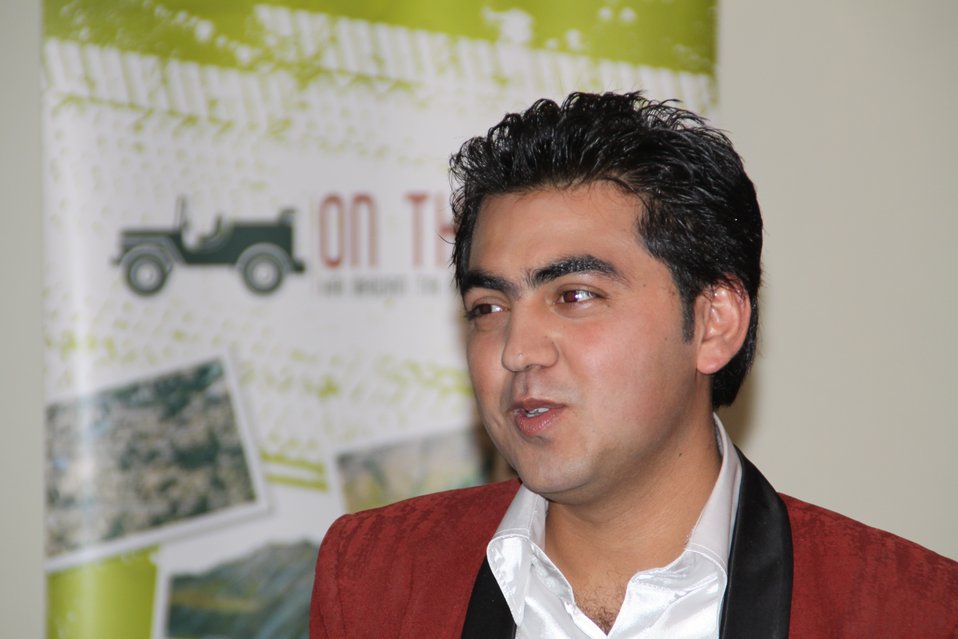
Wise Communication د هی میدان-طی میدان د لیدونکو سروی معلومات خپاره کړل

کابل، افغانستان، د جون ۱۵- د طلوع تلویزیون د هی میدان-طی میدان پروګرام د لیدونکو په هکله د یوی سروی لمړنی موندنی نن خپاره شول چی وایی د ۳۵ سلنی څخه زیات خلک په افغانستان کی هره شنبی شپه دا پروګرام ګوری. دا سروی د وایز ستراتیژیک کمیونیکیشن (Wise Strategic Communication) لخوا د امریکی متحده ایالاتو پرمختیایی اداری (USAID) په مالی مرسته ترسره شوی ده.

وایز دا سروی د اپریل په میاشت کی په نهه ټاکل شویو ولایتونو کی ترسره کړه. پدی سروی کی د ۲۰۰ څخه ډیرو ګډونکونکو رای ورکړه، په ۹ فوکس ګروپونو کی ۴۵ باخبره خلکو سره اساسی مرکی ترسره شوی ترڅو د هغوی نظرونه او ددی پروګرام اغیز په افغانی لیدونکو باندی ارزیابی کړی.

د هی میدان-طی میدان یا (On the Road) پروګرام چی د امریکی متحده ایالاتو پرمختیایی اداری لخوا تمویلیږی د افغانانو ملی ویاړ د توپیرونو سره سره د یو موټی او متحد اولس په شان جوړوی. دا پروګرام هره اونی یو نوی ولایت او سیمی ته خپله پاملرنه اړوی. ښاغلی مجیب عارض د مختلفو ولایتونو تاریخی، ټولنیز، او کلتوری اړخونه رابرسیره کوی، سیمه ایز خوراکونه څکی، سیمه ایزی لوبی کوی او سیمه ایز تاریخی ځایونه ګوری. دا پروګرام د هیواد د هر ګوډ څخه،د نړیوالی ټولنی په همکاری د افغانستان حکومت لخوا د بی شمیره کامیابو پرمختیایی پروژو په شمول، واقعی افغانی کیسی خلکو ته وړاندی کوی. د بزګرانو، ډاکټرانو، کارکونکو،ځوانانو او ټولنو مشرانو سره د مجیب مرکو له لیاری افغانان په خپل هیواد کی تغیرات ګوری او د پرمختیایی کوښښونو اغیز په خپله د افغانانو د خبرو له لیاری اوری.

د سروی څخه ځنی موندنی او لاس ته راوړنی په لاندی ډول دی:

•په ښه برابر ډول لیدونکو سره خبری شوی وی، د رایو معلوماتو د ښودنو له مخی هزاره، تاجک، ځوانو او با تحصیله ځواب ورکونکو لږ څه ډیر غوښتل چی دا پروګرام وګوری.
•پروګرام په ښه ډول رسیدلی وو، او ځواب ورکونکی دی ته لیوال وو چی د خپل هیواد د هر ګوډ څخه د رنګارنګو کلتورنو او تاریخ په هکله د زده کړی ښه موقع ده. د لیدونکو ۹۷ سلنی غوښتل چی دی پروګرام ته دی ادامه ورکړل شی او تر ټولو لوړه غوښتنه دا وه چی هره برخه دی اوږده شی.
•د موندنو څخه یو دا وه چی لیدونکو دی پروګرام ته د ملت جوړونی سره تړاو ورکاوه.

د فوکس ګروپونو له لیاری (Wise Communication) لاری ته اچولی وو په ملی یووالی باندی ځانګړی تاکید شوی وو ترڅو د یوی اونی څخه تر بلی اونی پوری د هی میدان-طی میدان پروګرام له لیاری ملی یووالی لا ښه قوی شی. ځنی ځوابونه په لاندی ډول وو:

•'دا د افغانانو په ملی یووالی کی یو مثبت رول لوبوی. کله چی افغانان نور خلک په ولایتونو کی ګوری چی یو شان دین لری او د هغو د ژوند کولو او کلتورونو څخه خبریږی او ګوری چی د هغو ترمنځ هیڅ ډول توپیر نشته. '

•'یو مثبت ټکی ته چی زه غواړم اشاره وکړم هغه داده چی خلک د نورو ولایتونو د خلکو دودونه ګوری او دا د نژادی ستونزو په کمولو کی مرسته کوی.'

د امریکی متحده ایالاتو پرمختیایی اداری مشر ښاغلی ویلیم ام فری وویل،'هغه سروی چی وایز کمیونیکیشن لاری ته اچولی وه دا وښوده چی ولی دا پروګرام یوه بریا ده. دا پروګرام د افغانستان خلک د تیرو سیاسی او ټولنیزو کرښو څخه سره را یو ځای کوی چی ددی هیواد مختلف دودونو سره سره یو بل په غیږ کی راونیسی. مونږ ویاړو چی دا پروګرام ته مو مالی مرسته برابره کړی ده او هیله کوو چی دا پروګرام تر ډیرو راتلونکو کلنو پوری دوام ومومی.'

د موبی ګروپ یوه برخه، ده طلوع تلویزیون دا هدف لری چی نوی پروګرامونه جوړ کړی ترڅو افغانان خبرکړی، خوشحاله کړی او ورته غوښتنی وړاندی کړی. د موبی ګروپ مشر ښاغلی سعد محسنی وویل،' د هی میدان-طی میدان پروګرام د بریا تر ټولو په زړه پوری اړخ دادی چی دا په افغانستان د خپل شان لمړنی پروګرام دی چی هره ورځ افغانان پدی توانوی ترڅو یو بل وپیژنی. د ټولو سره سره مونږ د هیواد یو کوچنی تصویر ولید او نور ډیر لا شته چی وکتل شی.'

د سروی مکمل راپور کولای شی د www.irp-af.com/ ویبسایټ څخه لاس ته راوړی.